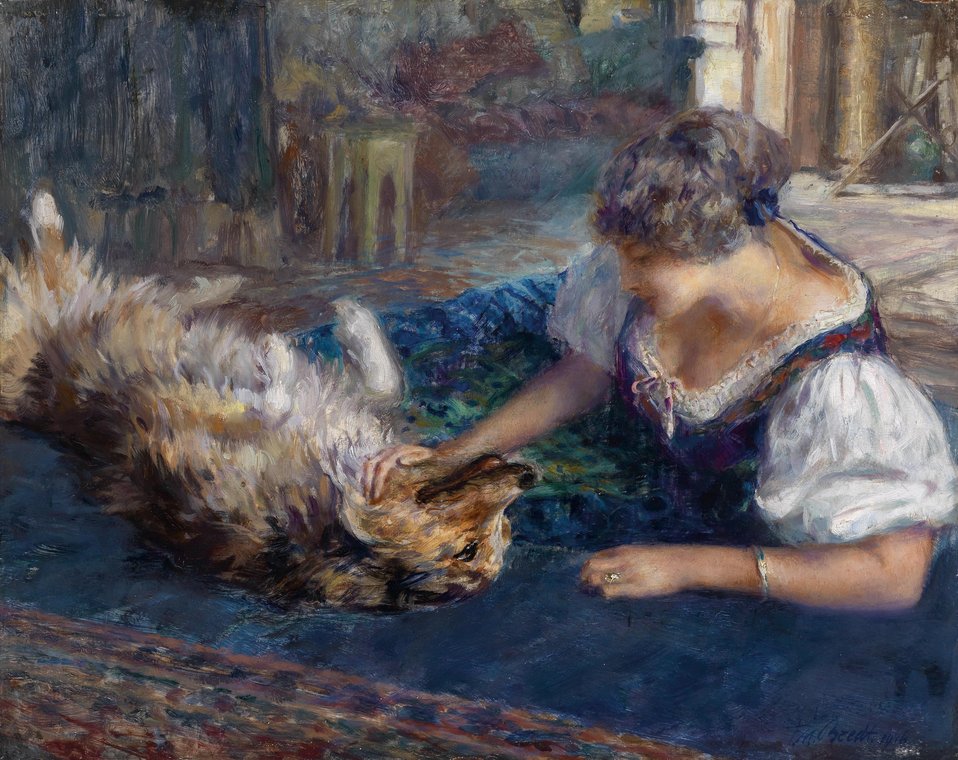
Spielgefährten, signiert, datiert FM Bredt 1916, rückseitig betitelt Spielgefährten, Öl auf Holz, 40 x 50 cm